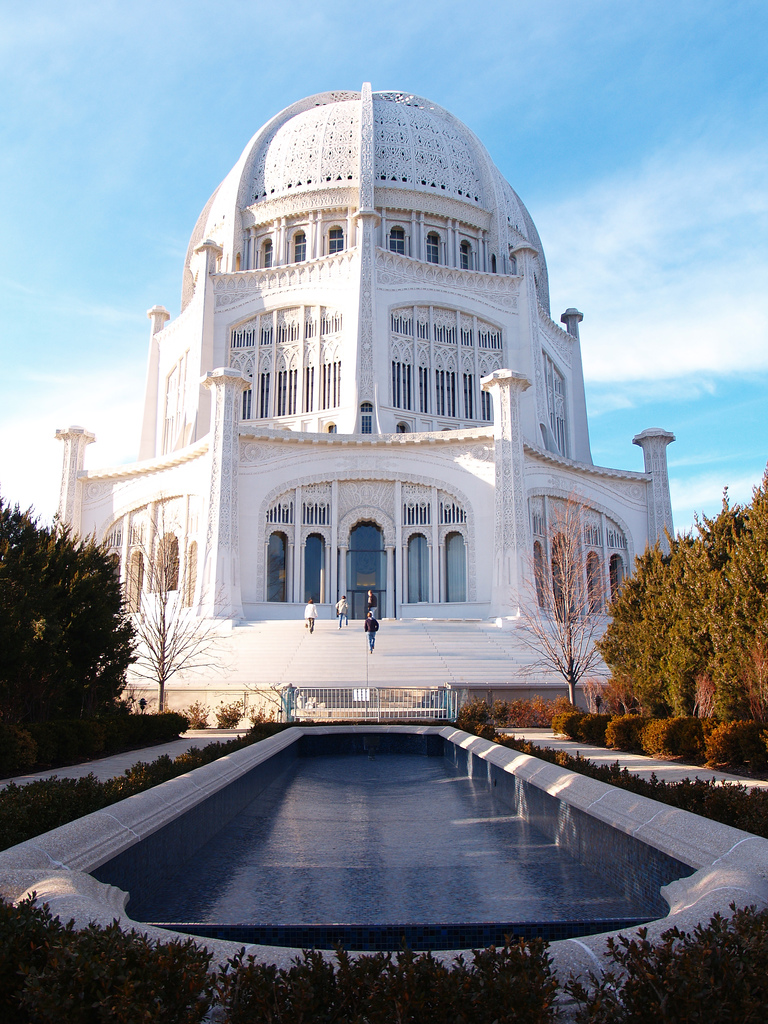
Magyar: A chicagoi bahá’í templom. 中文: 美国伊利诺州威尔米特的灵曦堂.